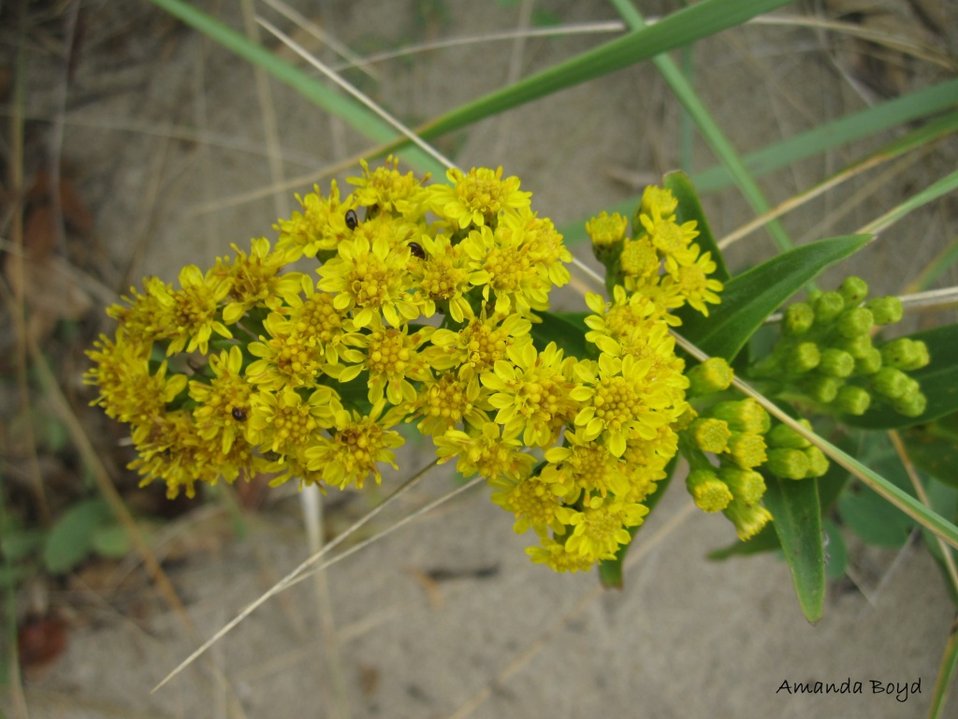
goldenrod

Nantucket National Wildlife Refuge